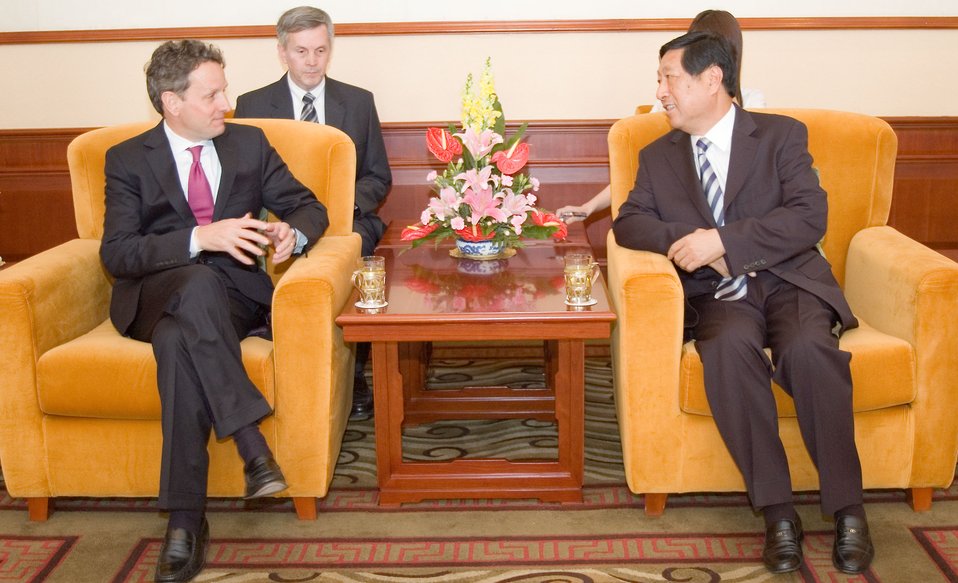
China trip: May 31-June 2 2009

Secretary Geithner meeting with National Development and Reform Commission Chairman Zhang Ping.